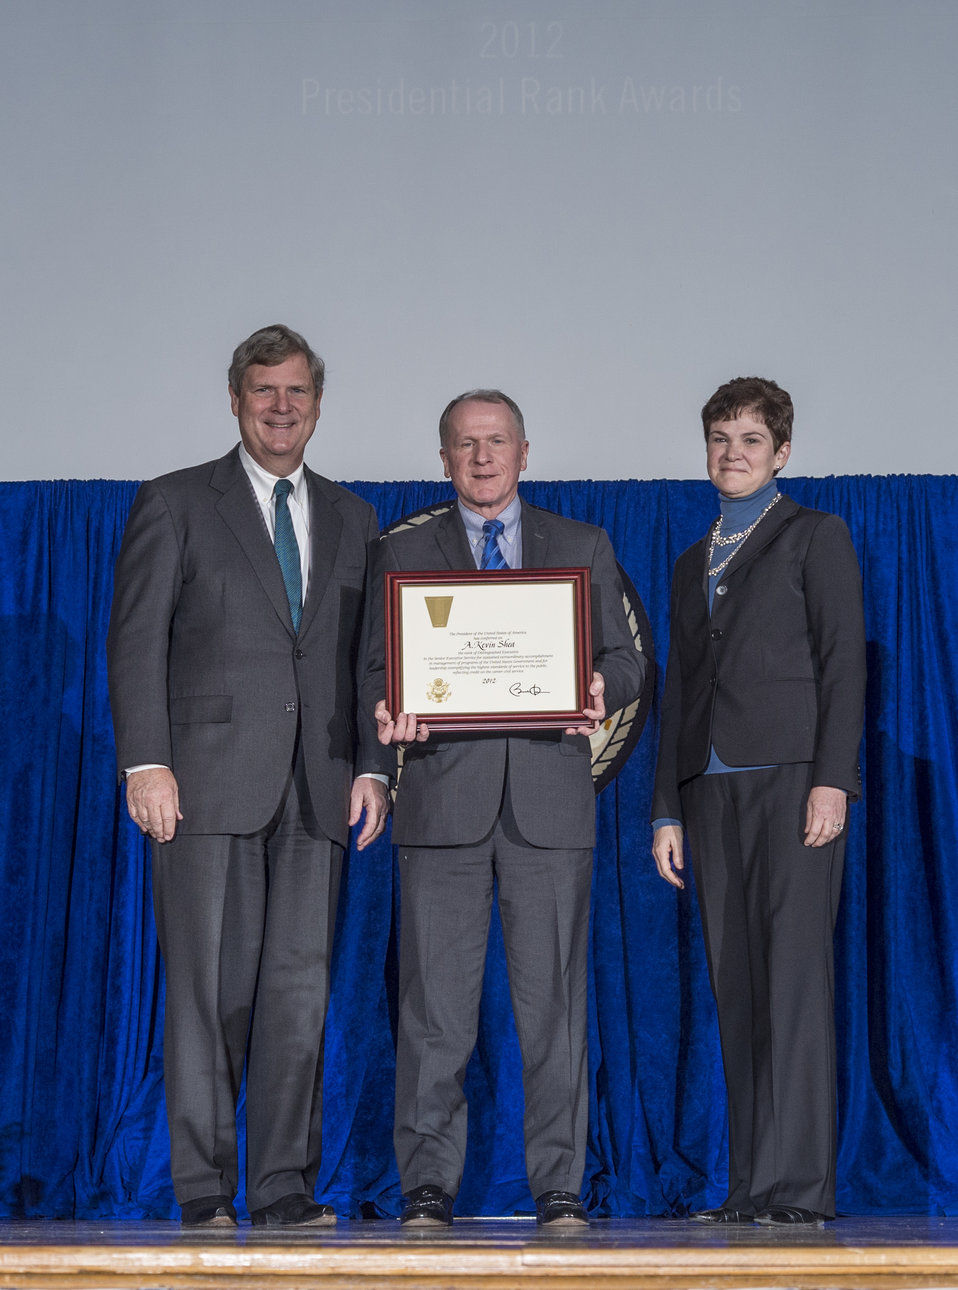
Agriculture Secretary Tom Vilsack and Agriculture Deputy Secretary Krysta Harden present the Presidential Rank Award to A. Kevin Shea for Distinguished Executive in the Senior Executive Service for sustained extraordinary accomplishment in management of programs of the U.S. Government and for leadership exemplifying the highest standards of service to the public, reflecting credit on the career civil service at the 2013 Secretary's Honor Awards in the Jefferson Auditorium at the U.S. Department of Agriculture (USDA) in Washington, D.C. on Wednesday, Dec. 11, 2013.